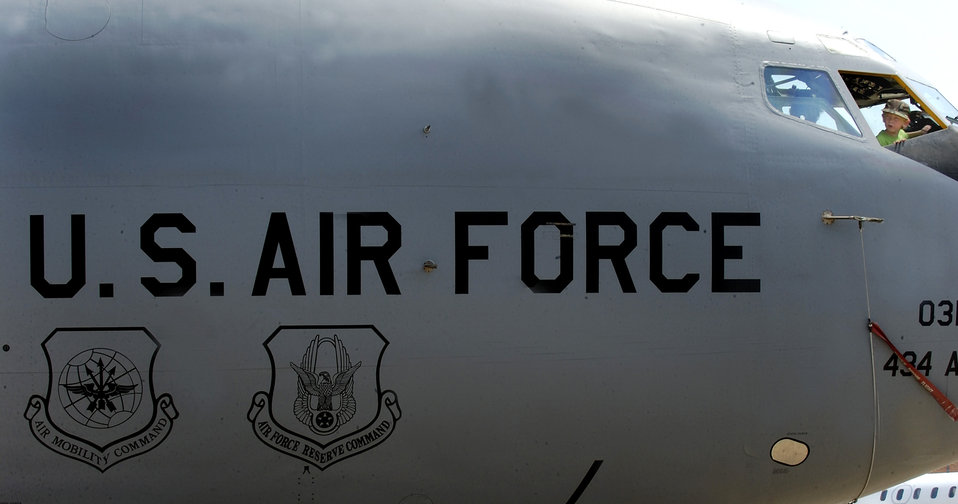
Air Power Over Hampton Roads Air Show 2006

Sean Anderson, a resident of Hampton, Va., checks out the view from the cockpit of a KC-135 Stratotanker on Saturday, May 6, 2006 at the Air Power Over Hampton Roads Airshow on Langley Air Force Base, Va.